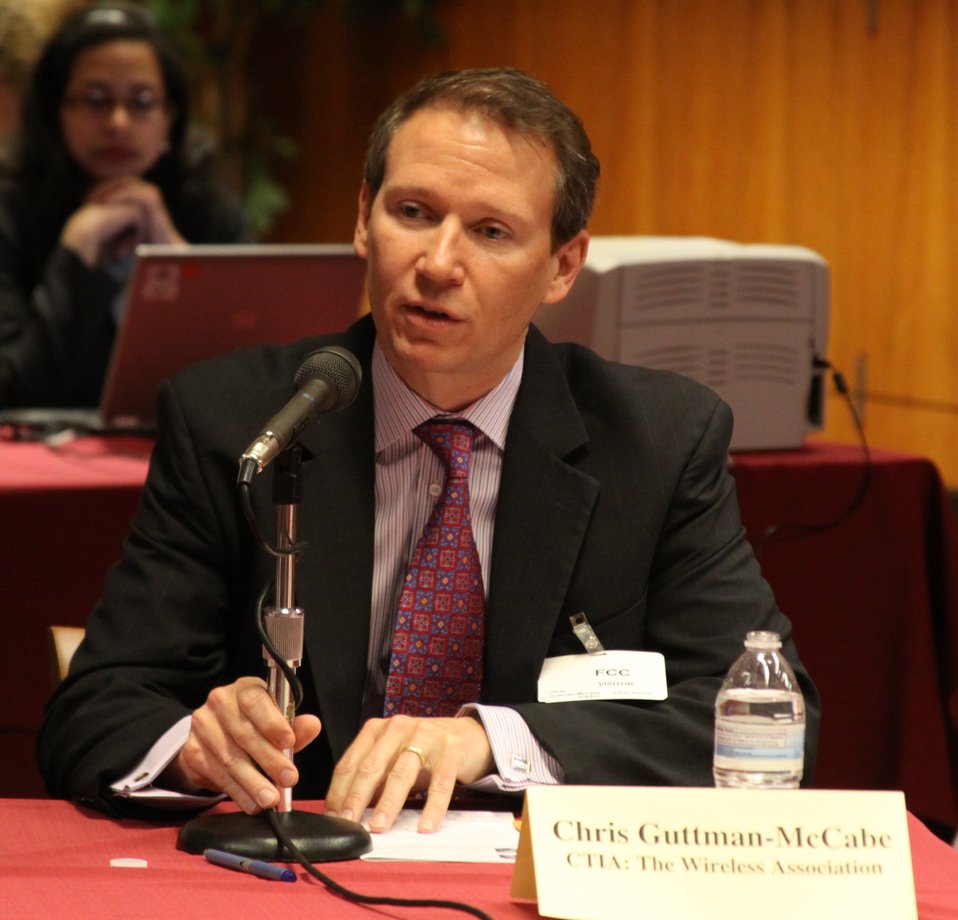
April 17, 2013 Bill Shock and Cramming Workshop